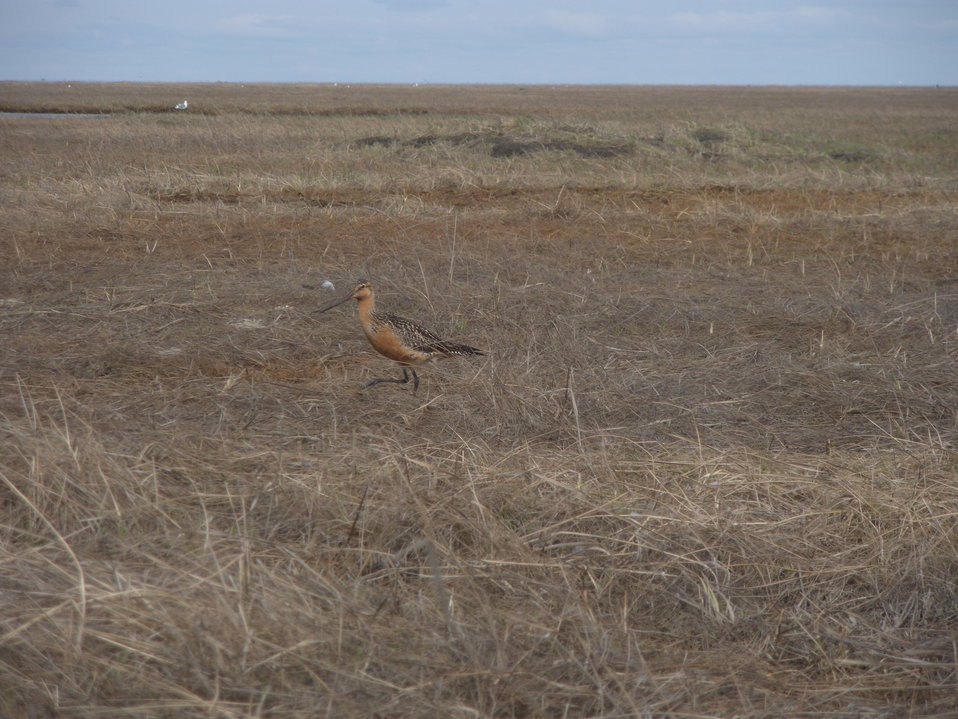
Male godwit vocalizing

Yukon Delta NWR
Male godwit letting his mate know that something is amiss.